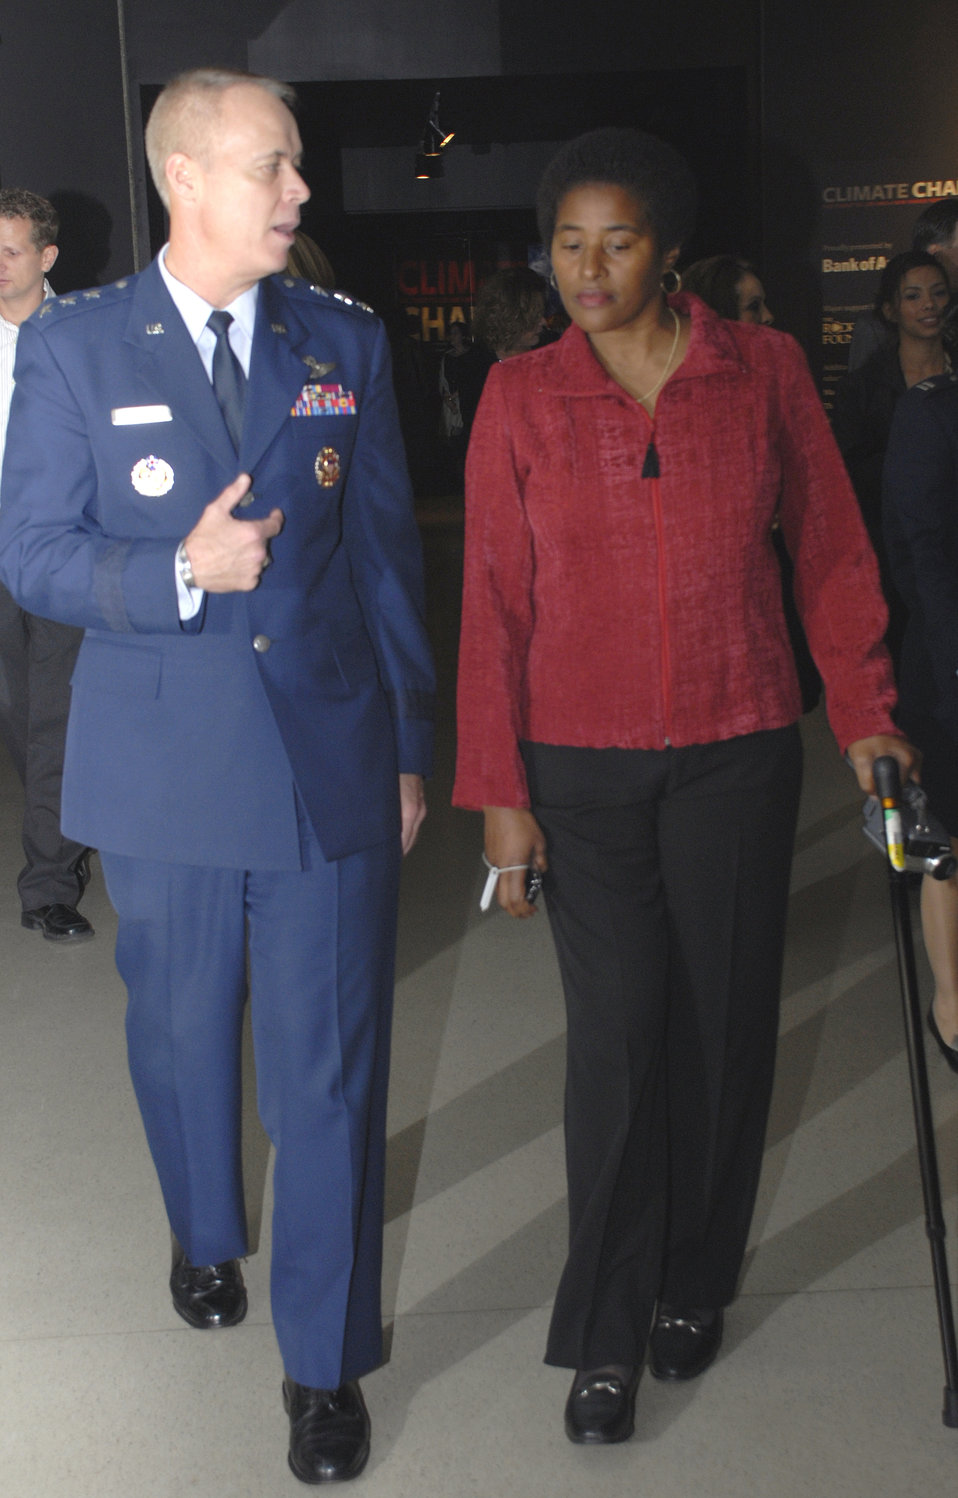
USO salutes wounded warriors in NYC

Lt. Gen. Dick Newton, deputy chief of staff for manpower and personnel at Air Force Headquarters, talks with Chief Master Sgt. Sandy Ware, during this year's United Service Organizations'